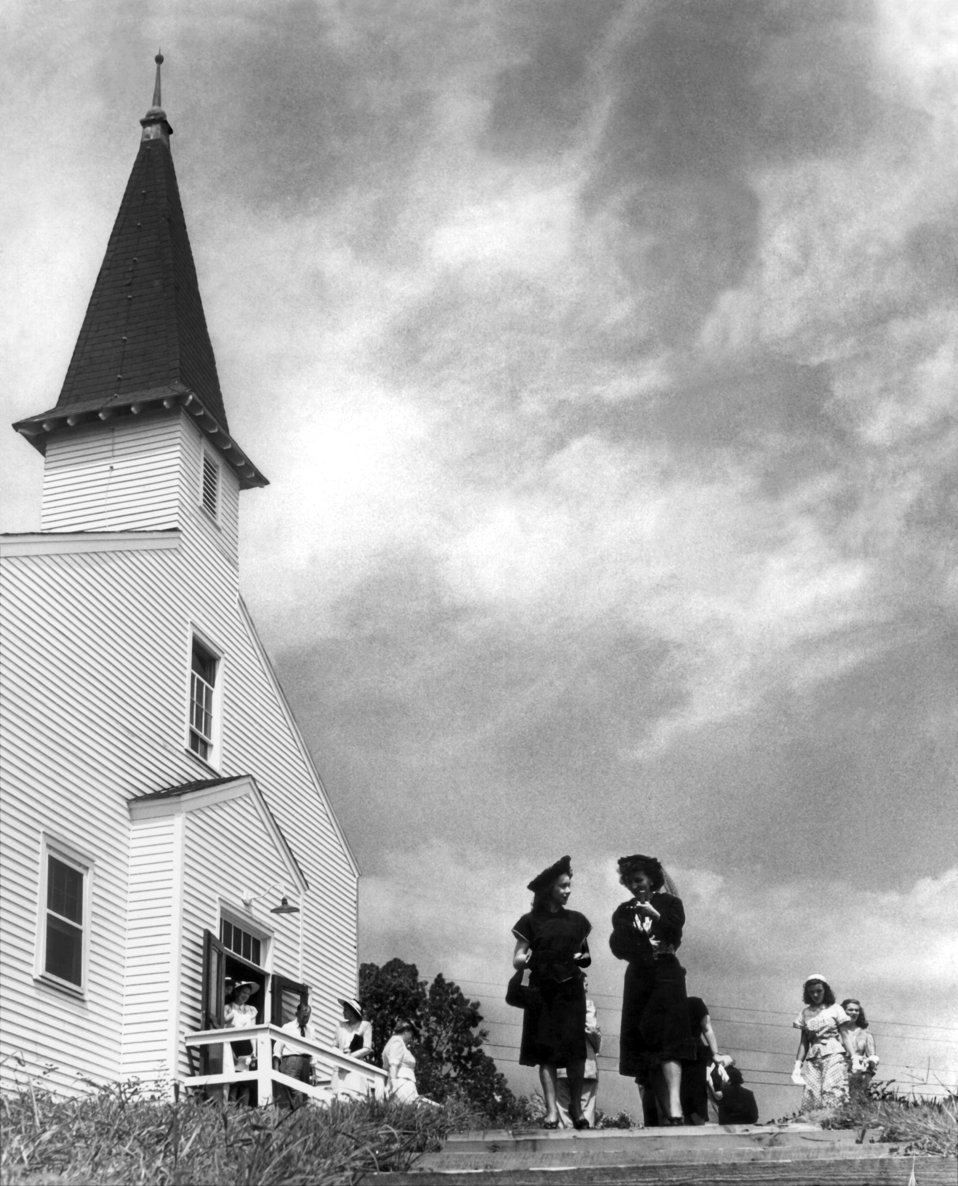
Chapel on the Hill first church in Oak Ridge

P-2 DOE photo Ed Westcott Chapel on the Hill first church in Oak Ridge built by the Army Oak Ridge Tennessee 1945